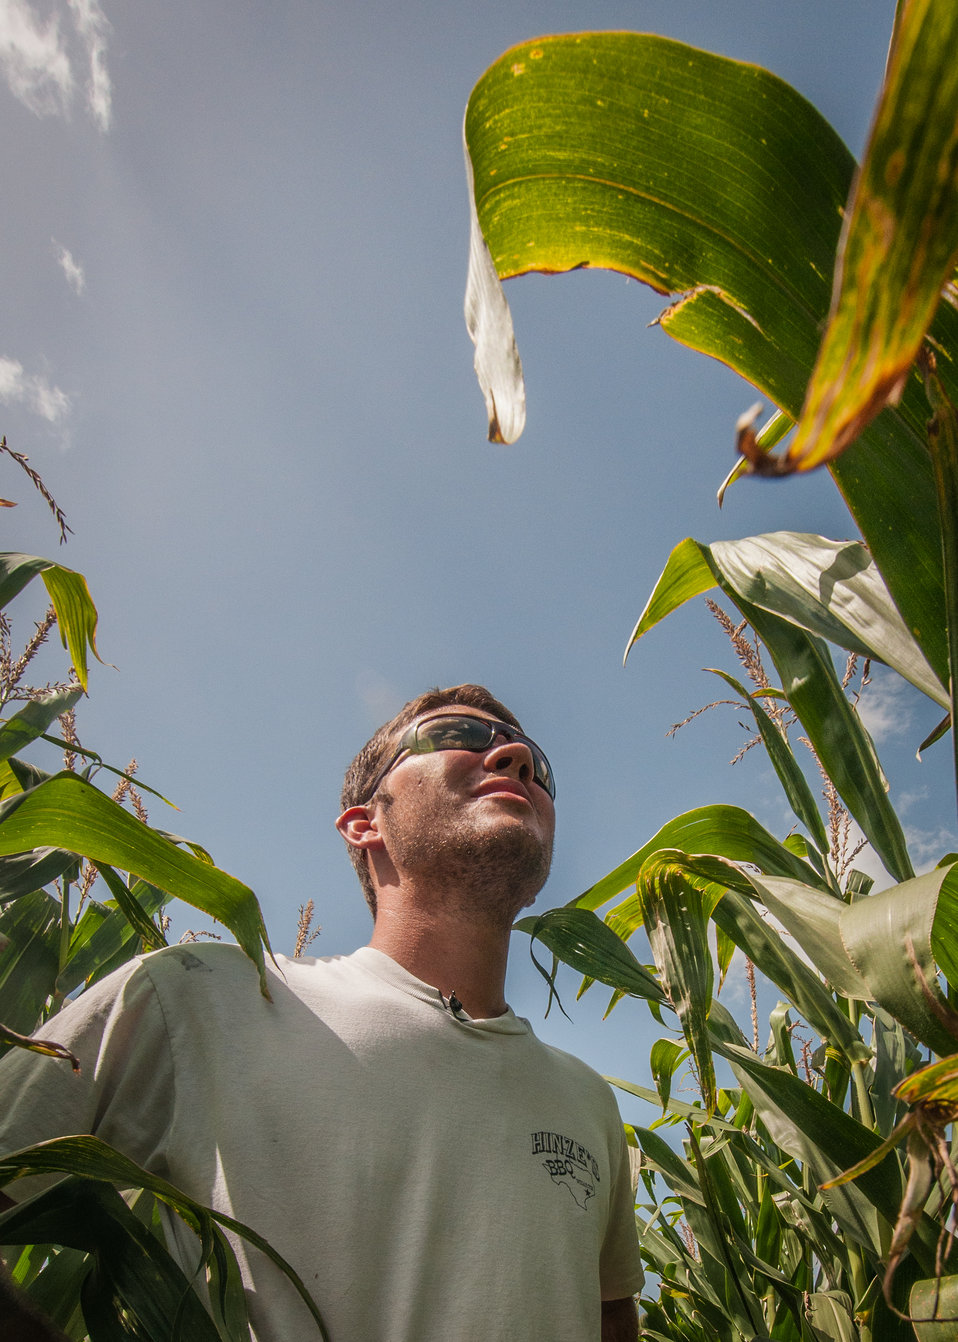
Philip Marek checks the health of a crop of #2 yellow corn at his father's farm in Wharton County, TX on Jun. 20, 2013. Philip Marek has been a farm owner since 2010 and started with 210 acres. Marek and his cousin Josh Marek were able to use a U.S. Department of Agriculture (USDA) Farm Services Agency (FSA) small and new farmer and rancher loan programs provided them the ability to handle initial business start-up and equipment purchase.